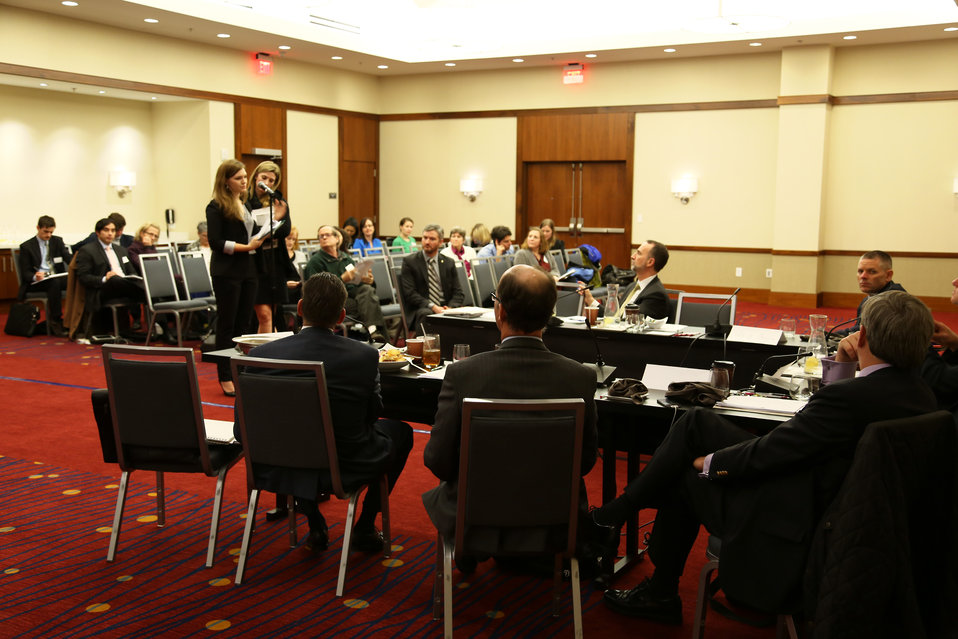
Wildlife Trafficking Advisory Council Meeting March 20, 2014